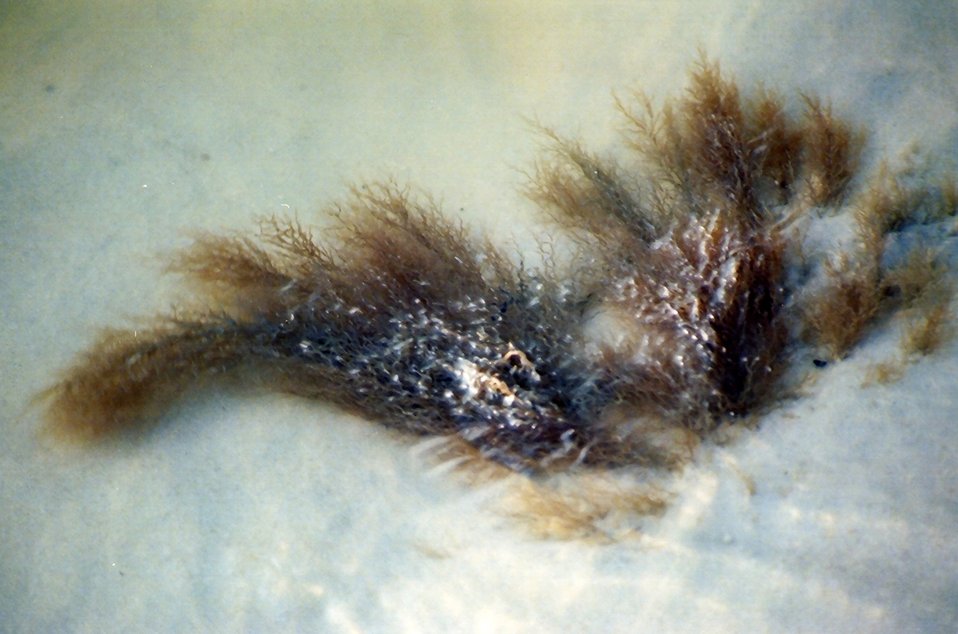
Marine algae in shallow waters of the Gulf of Mexico.